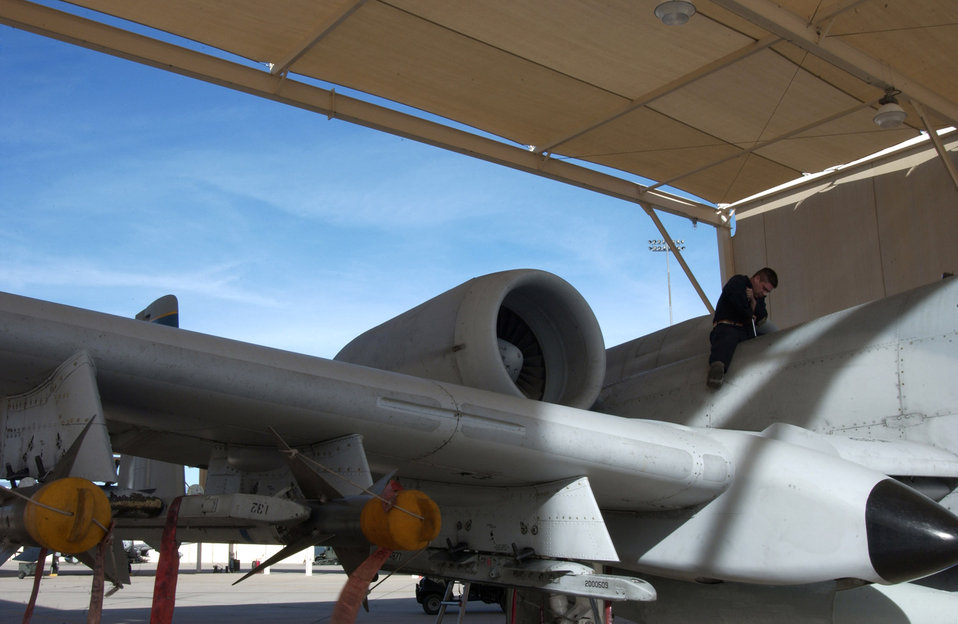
This A-10's getting ready to roll

Staff Sergeant Astolfo Mercado closes a panel on an A-10 Thunderbolt II Oct. 28 on the flightline of Davis-Monthan Air Force Base, Ariz. Sergeant Mercado is a crew chief from the 355th Aircraft Maintenance Squadron.